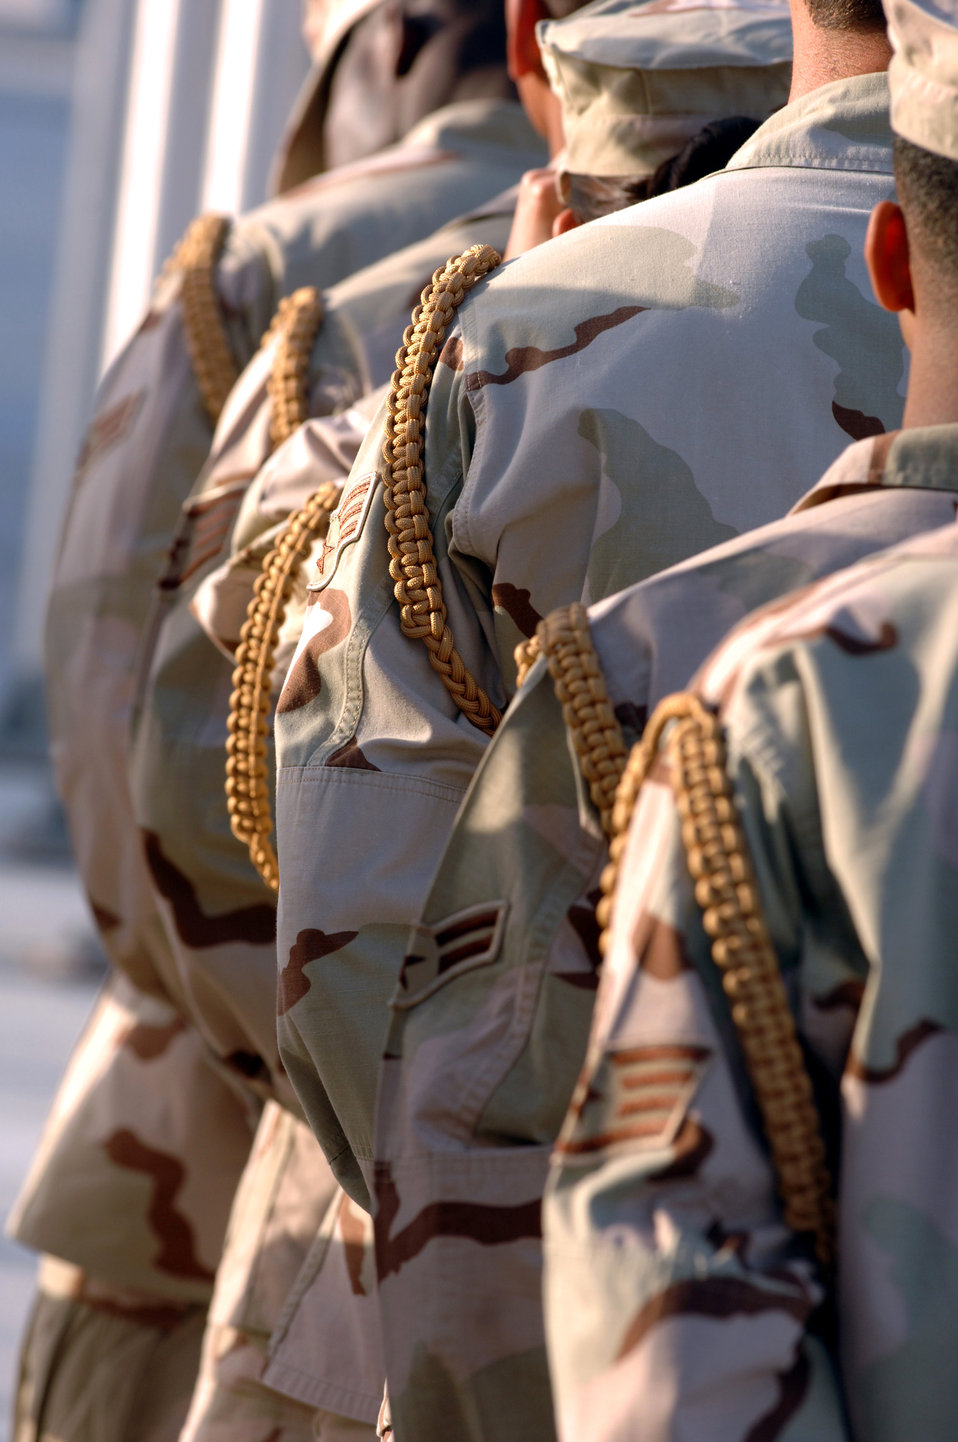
Desert honor guard

The honor guard lines up before a retreat ceremony at a deployed location in Southwest Asia Friday, March 24, 2006. The honor guard Airmen are known by the gold rope around their left arm. The base honor guard provides honors and ceremonies for distinguished personnel and posts the colors for change of command ceremonies, promotion ceremonies, parades and celebrations. They also render military funeral honors for active-duty servicemembers who served honorably in the Air Force.